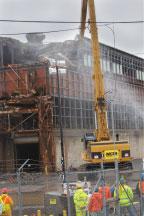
K-25 Demolition

Massive shears cut into the west wing of the K-25 Building at the East Tennessee Technology Park, marking the December 16, 2008 start of demolition of a facility which has been shut down since 1964.